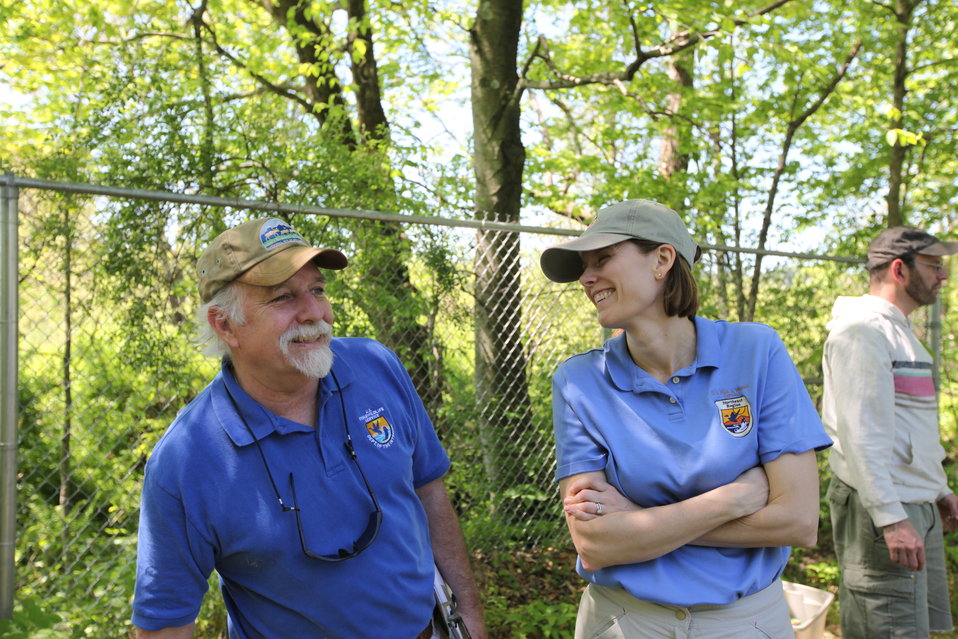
Youth Fishing Derby 2012

Megan Nagel/USFWS